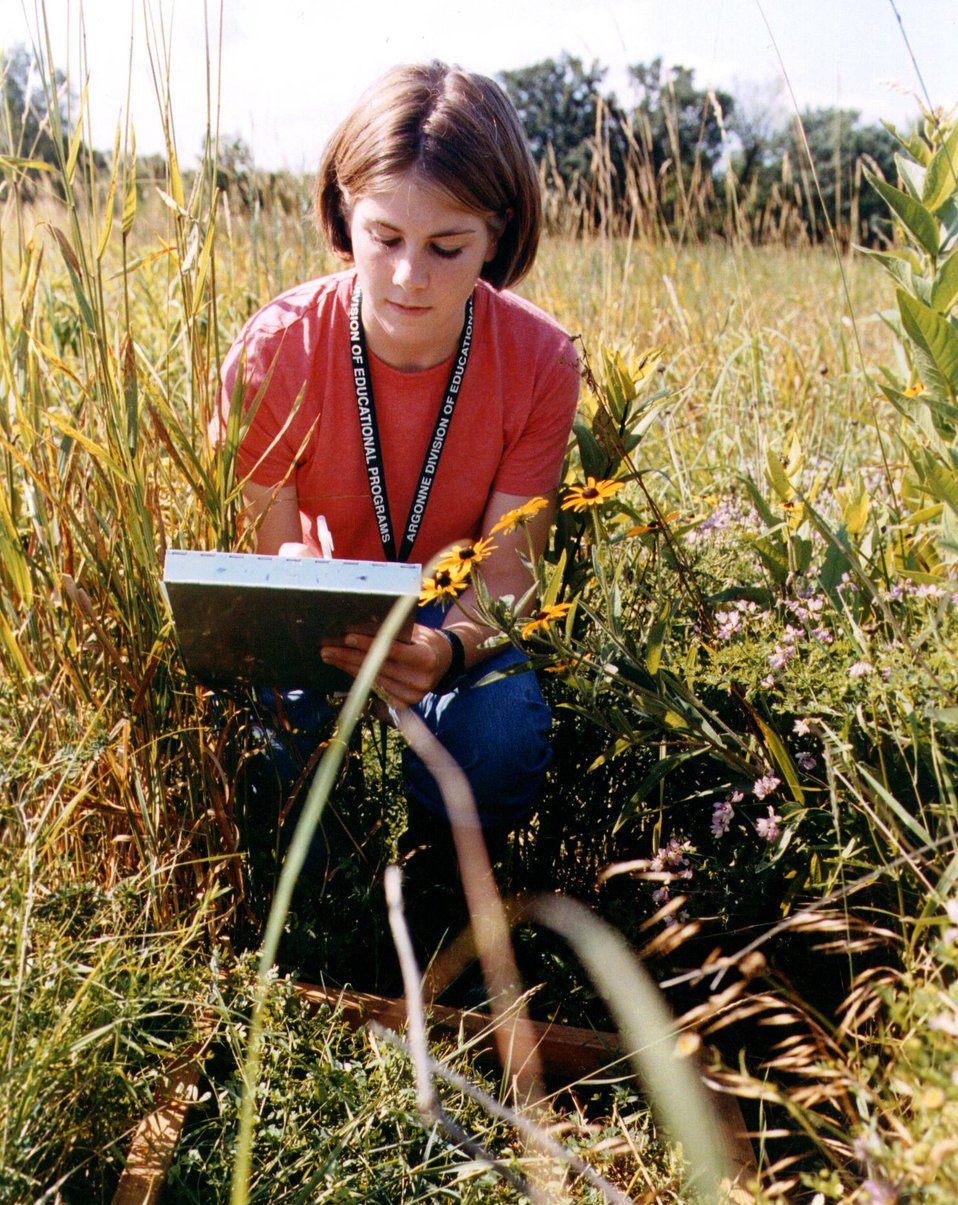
SUMMER INTERN FROM OLIVET NAZARENE UNIVERSITY, COLLECT DATA IN THE FIELD AS PART OF ANL'S PRE-SERVICE TEACHER PROGRAM.

AN ARGONNE NATIONAL LABORATORY SUMMER INTERN WORKING IN THE LAB'S ENVIRONMENTAL ASSESSMENT DIVISION. ANL'S PRE-SERVICE TEACHER PROGRAM ALLOWS STUDENTS MAJORING IN EDUCATION, THE OPPORTUNITY TO CONDUCT SCIENTIFIC RESEARCH AND LEARN HOW TO BECOME SUCCESSFUL SCIENCE TEACHERS.